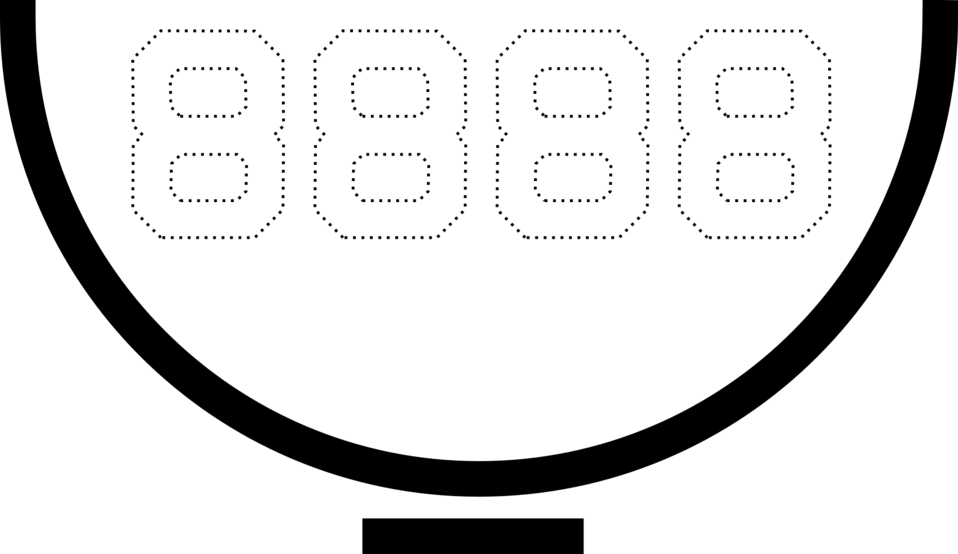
Nederlands: Zeilteken van nl:16m2